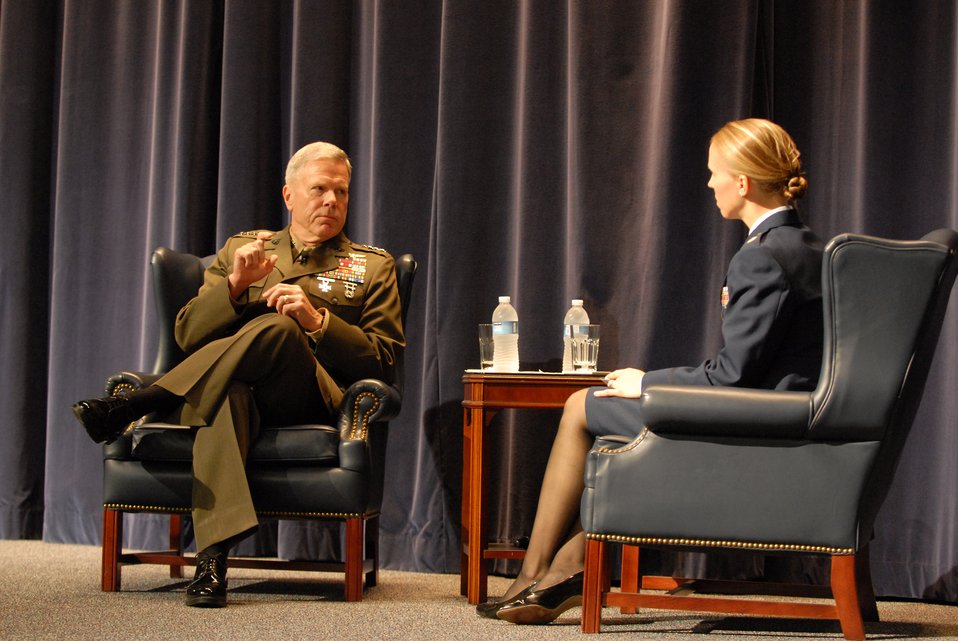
Gathering of eagles

Marine Gen. James Amos, assistant commandant of the U.S. Marine Corps, participates in a student discussion and question session at Air Command and Staff College as part of the 2010 Gathering of Eagles program June 2, 2010, at Maxwell Air Force Base, Ala.